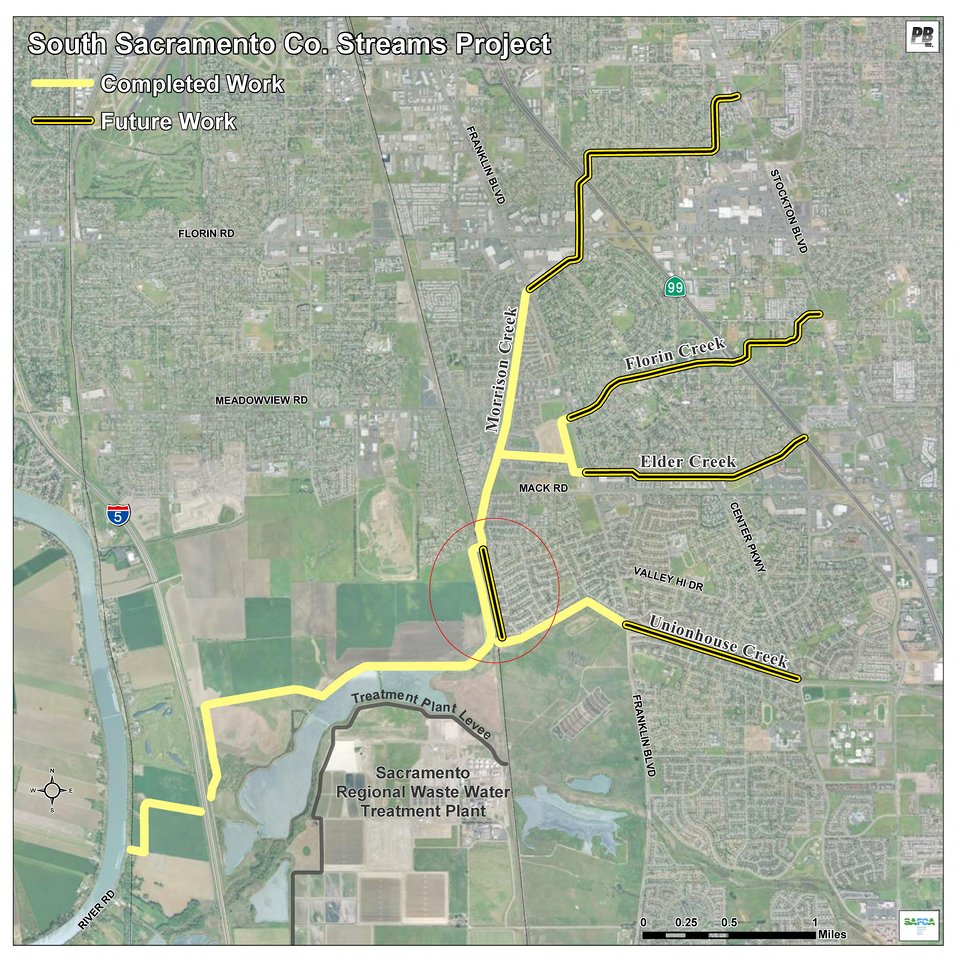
South Sacramento flood wall construction map

A red circle illustrates where contractors for the U.S. Army Corps of Engineers Sacramento District will construct a new concrete flood wall along Morrison Creek in south Sacramento, Calif. The 3,300-foot-long flood wall will extend an existing flood wall, further reducing flood risk in the area. The work is a joint effort between the Corps, the Central Valley Flood Protection Board and the Sacramento Area Flood Control Agency. Completion is scheduled for 2013. (Map courtesy of Sacramento Area Flood Control Agency)